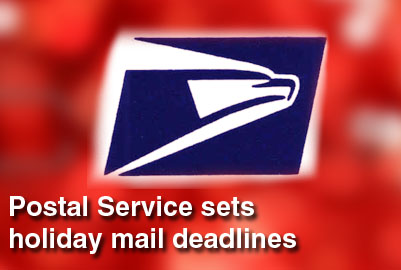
Holiday mail deadline